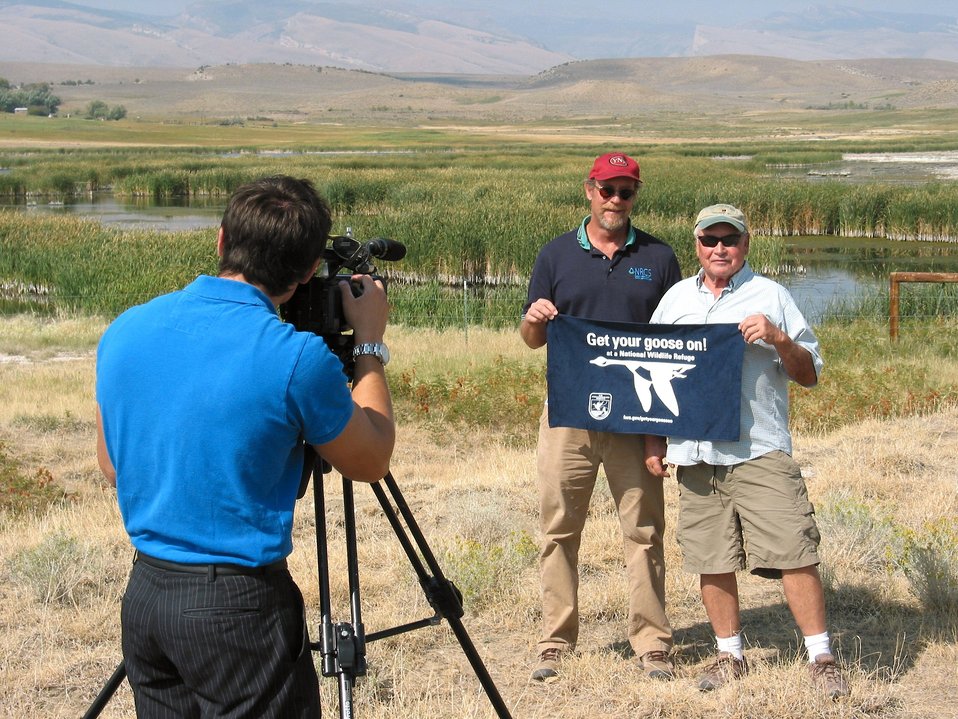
GYGO! - NBC News Style

USFWS partners, Steve Poitras of NRCS and Tribal Liaison and Shoshone and Arapaho Tribes Water Board member Dick Baldes, Get Their Goose On! for NBC news, while talking about the Alkali Lake Project underway on the Wind River Reservation.